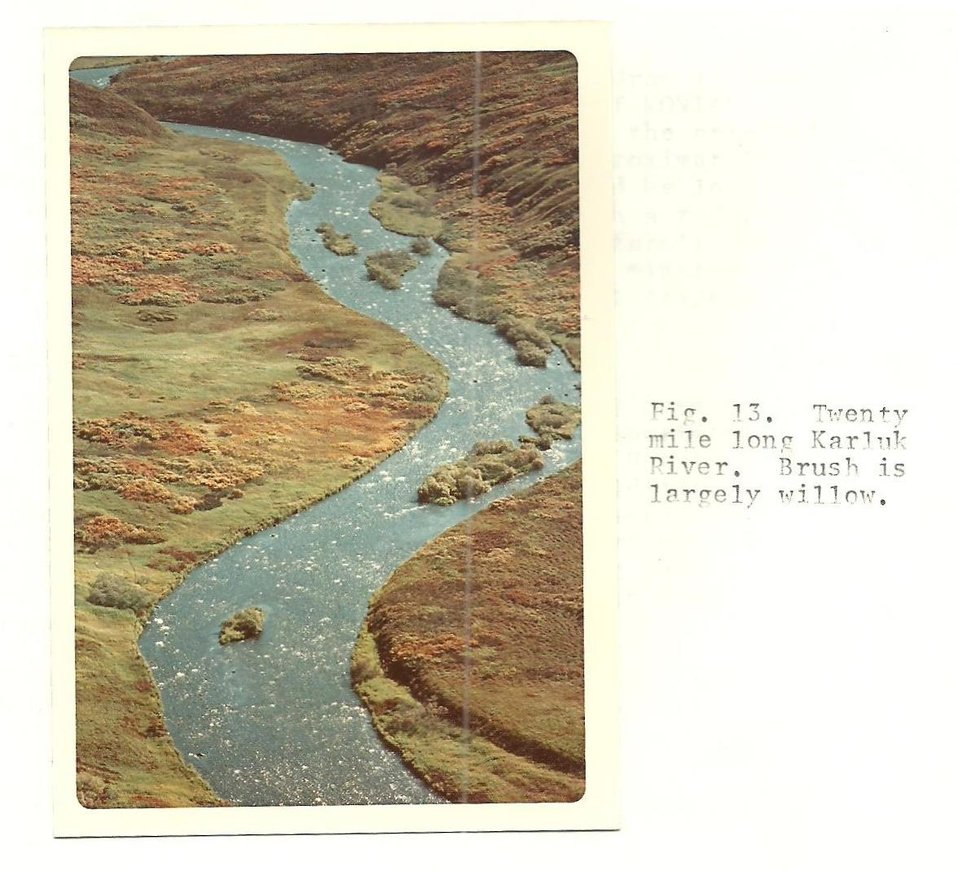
(1975) Karluk River

Credit: USFWS

Source and Contact: Kodiak National Wildlife Refuge